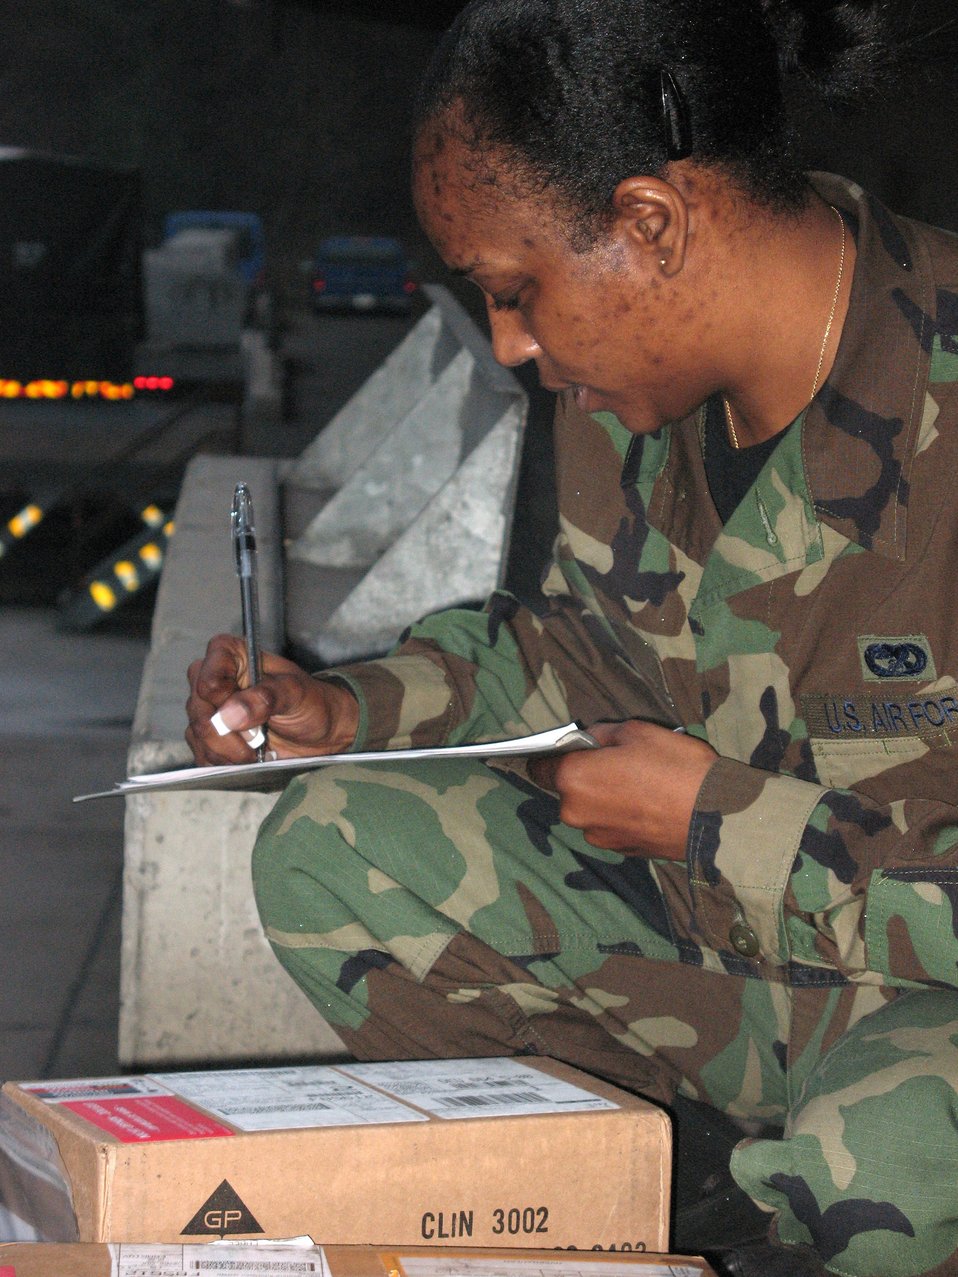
Ramstein inbound section delivers

Senior Airman Tammy Orr records information Feb. 14 from a package that just arrived at the Cargo Movement Center inbound section at Ramstein Air Base, Germany. Airman Orr is just one of approximately 50 Airmen and civilians who work at the CMC.